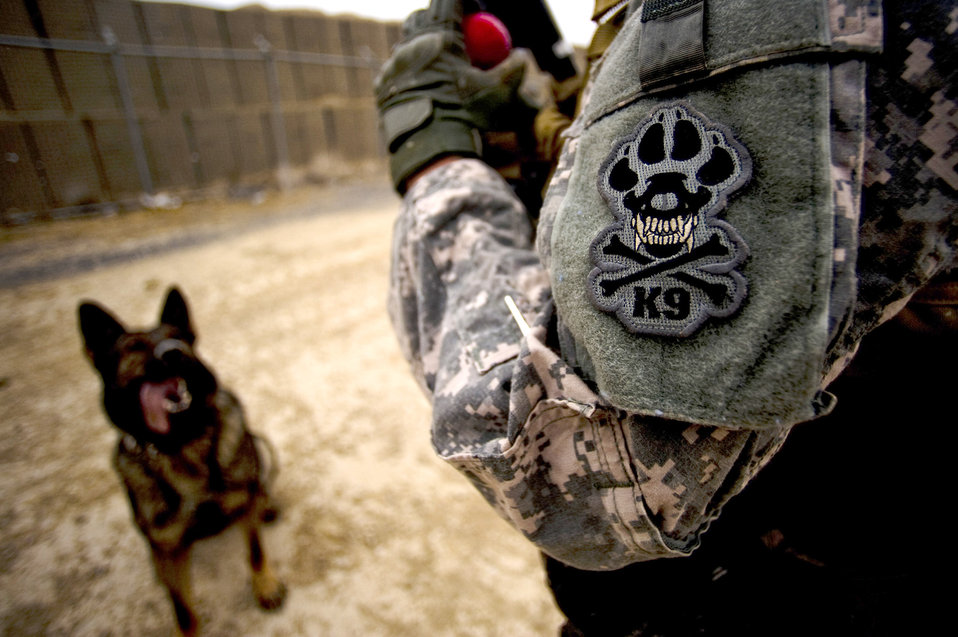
Bringing more bark to fight in Afghanistan

Staff Sgt. Pascual Gutierrez praises and prepares to give Coley a chew toy Feb. 18, 2011, at Forward Operating Base Lagman, Afghanistan, after Coley successfully sniffed out explosive devices during an explosive device detection training session. Sergeant Gutierrez is a military working dog handler and Coley is a military working and patrol explosive detection dog assigned to Combined Team Zabul, Afghanistan. The team is composed of working dogs and dog handlers from the Air Force, Army and Navy who help support the various units at FOB Lagman during patrols and other various missions.